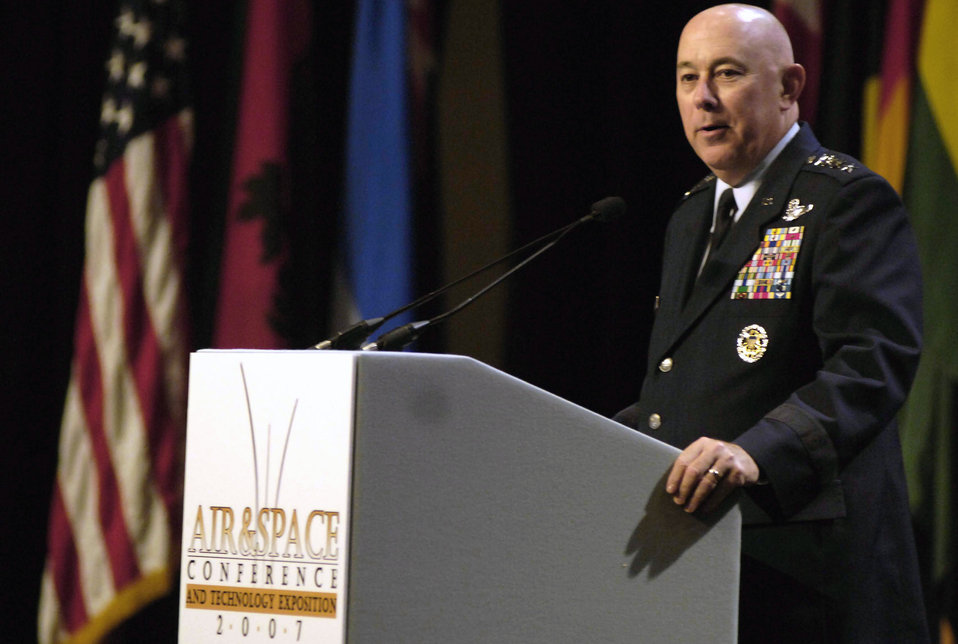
Chief of staff addresses future of airpower at conference

Gen. T. Michael Moseley addresses the crowd at the Air Force Association's 2007 Air and Space Conference and Technology Exposition Sep. 26 in Washington, D.C. General Moseley is the Air Force chief of staff.